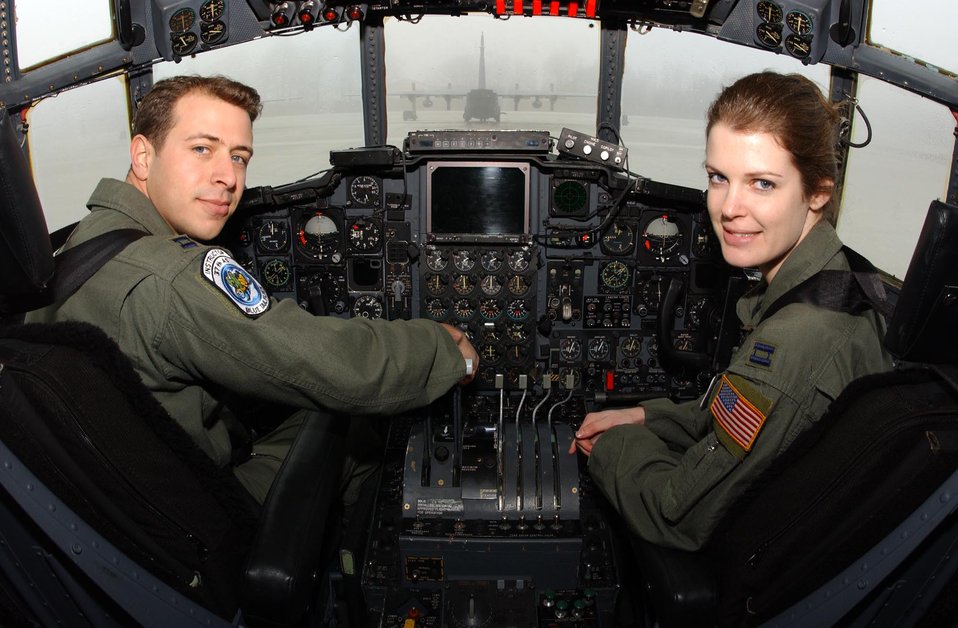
Married couple share life, Air Force mission

Since February 2003, Captains Dan and Sarah Santoro, have spent more than 1,070 days deployed together throughout Southwest Asia in support of the war on terrorism. The Santoro couple are pilots with 37th Airlift Squadron at Ramstein Air Base, Germany.